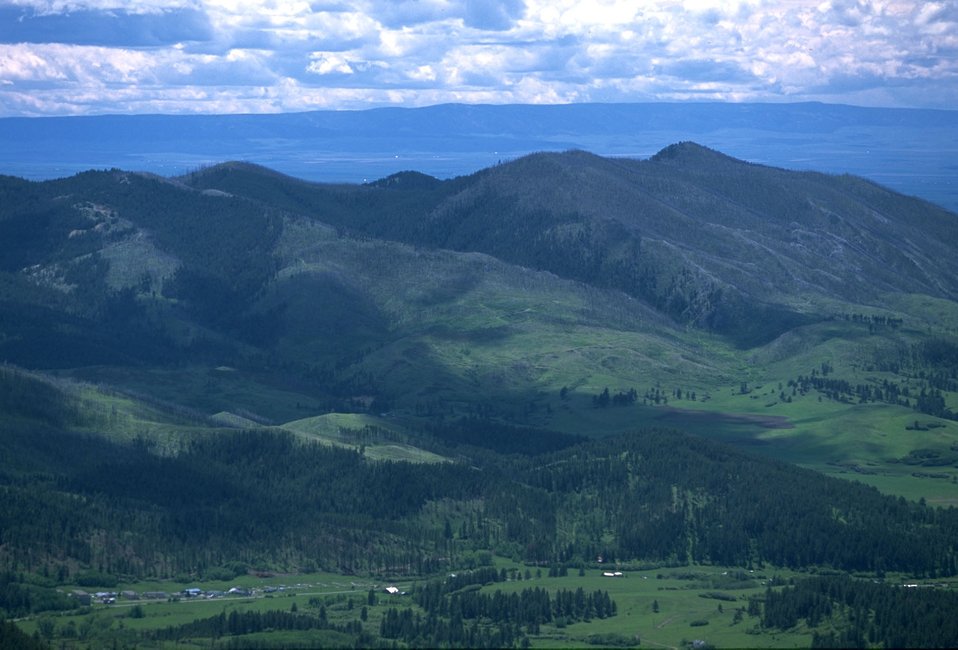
Judith Mountains sloping towards North Moccasin